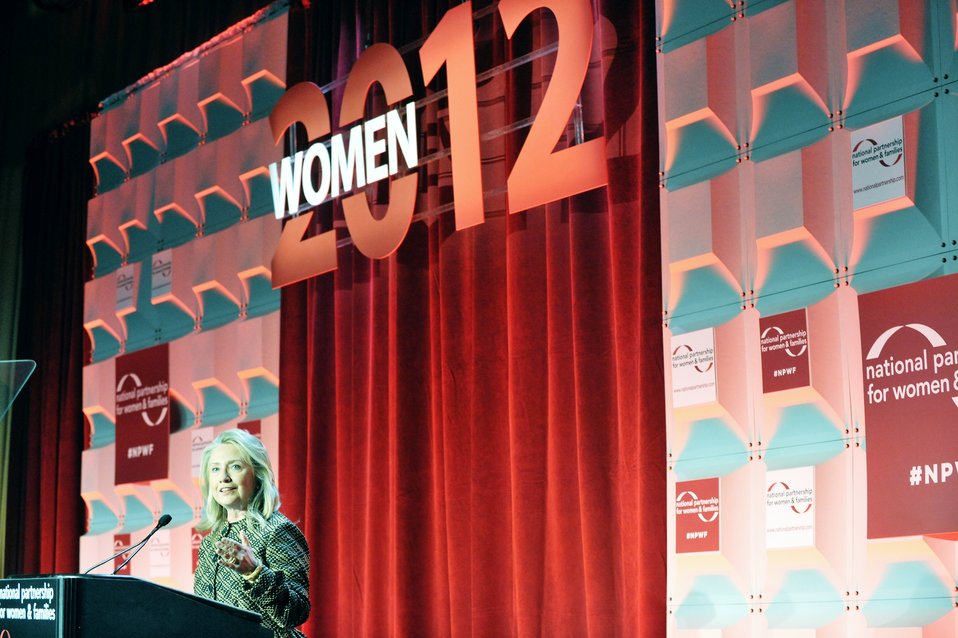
Secretary Clinton Delivers Remarks at the National Partnership for Women and Families

U.S. Secretary of State Hillary Rodham Clinton delivers remarks at the National Partnership for Women and Families in Washington, D.C., on June 21, 2012.